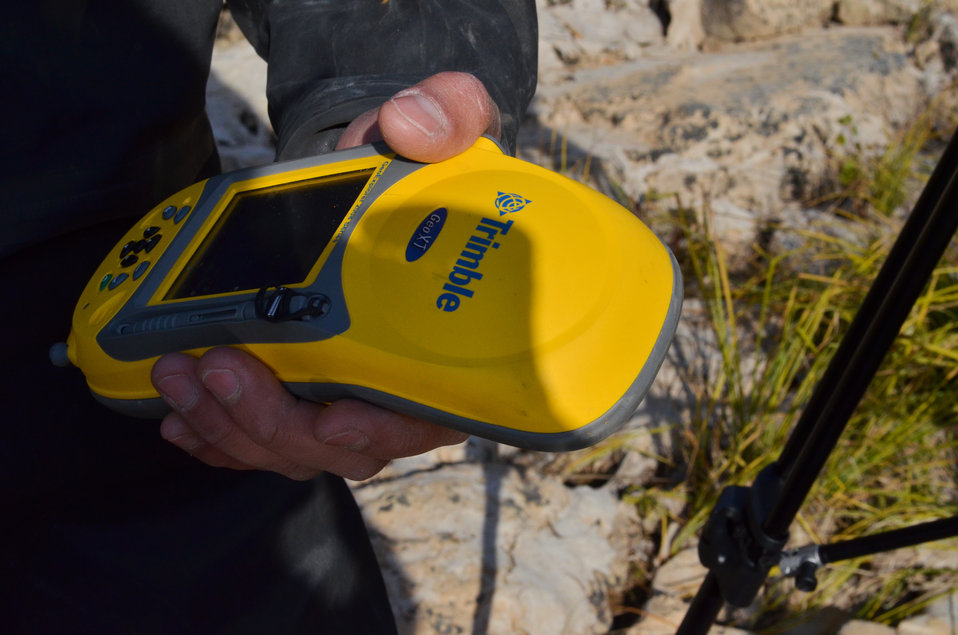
Tracking salmon spawning below Englebright Dam

Pacific States Marine Fisheries Commission biologist Casey Campos holds a GPS unit used for documenting salmon spawning activity below Englebright Dam near Smartsville, Calif., Dec. 12, 2011. Under the direction of the National Marine Fisheries Service, the U.S. Army Corps of Engineers Sacramento District, which owns and manages the dam, has placed more than 5,000 tons of gravel in the river to improve spawning habitat for the threatened Chinook salmon and steelhead trout species. The PSMFC is charged with tracking spawning activity related to the new gravel. The device records the GPS location of spawning sites, or redds, to within a half-centimeter’s accuracy, said PSMFC project manager Duane Massa.